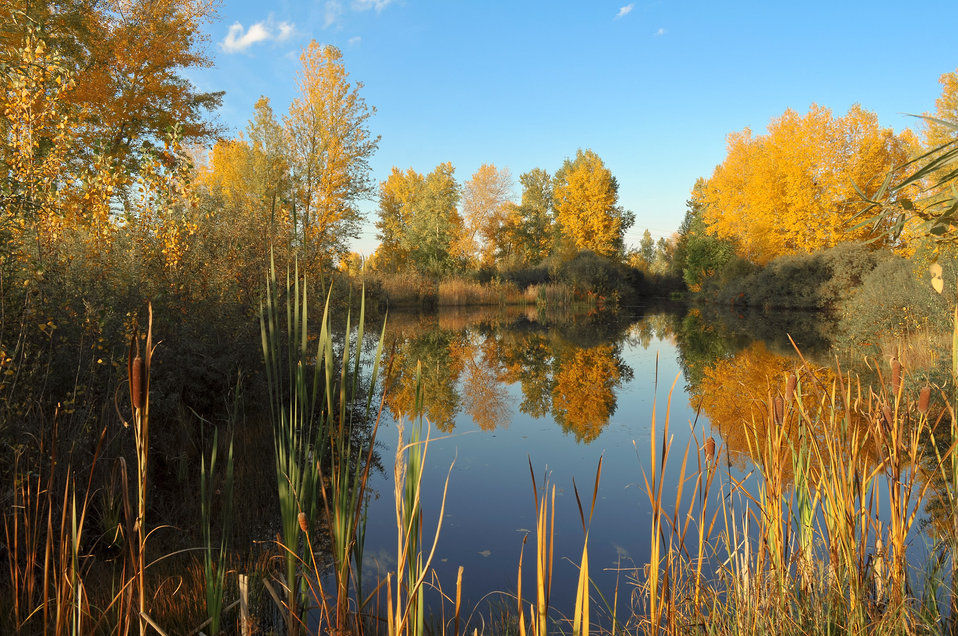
Rushes

Reeds on the bank of the lake in fall.